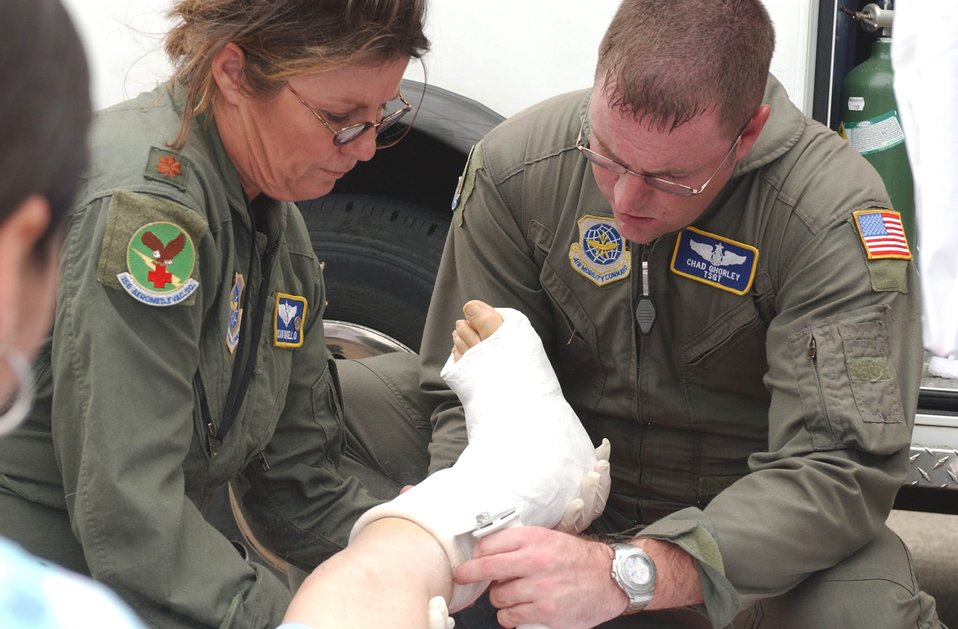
Heading home

SEBRING AIRPORT, Fla. -- Maj. Susan Martello, left, and Tech. Sgt. Chad Ghorely remove a new cast off a patient's leg before being loaded onto a C-130 Hercules here Sept. 23. Due to the high air pressure during flight, the cast would have become uncomfortable. The C-130 transported more than a dozen elderly evacuees back to Key West, Fla. Major Martello and Sergeant Ghorely are both assigned to North Carolina Air National Guard's 156th Aeromedical Squadron.